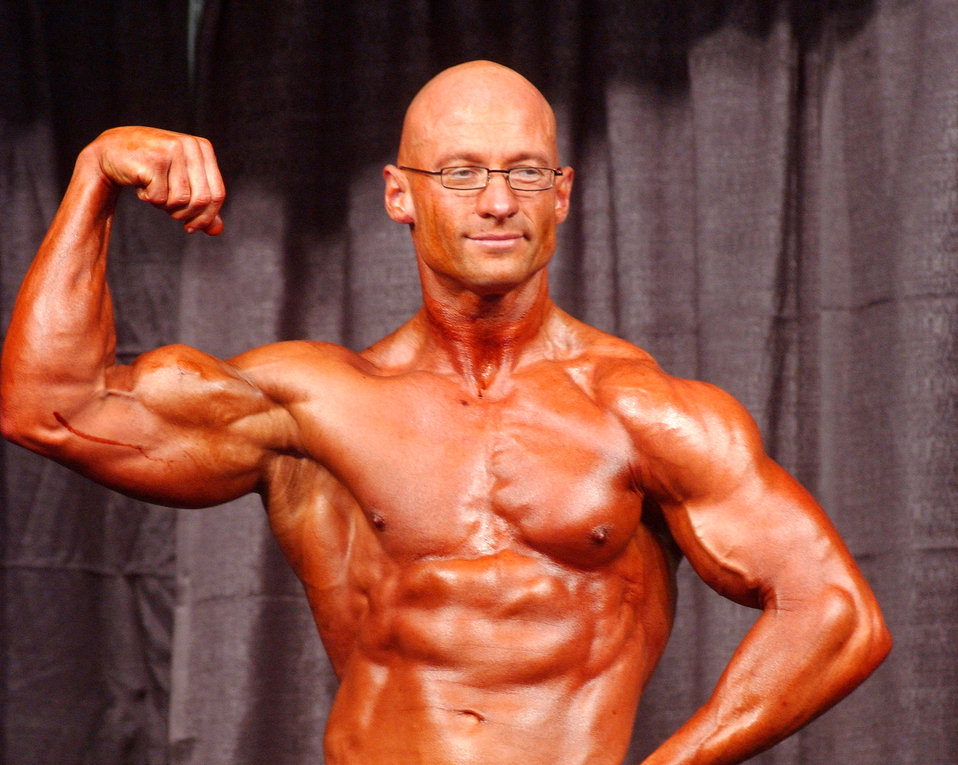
Bodybuilder

RAMSTEIN AIR BASE, Germany (AFPN) -- Master Sgt. Troy Saunders does a front-bicep pose during the 60-second pose-off at bodybuilding competition here. Sergeant Saunders recently took home the overall title at the 2005 German bodybuilding championships.